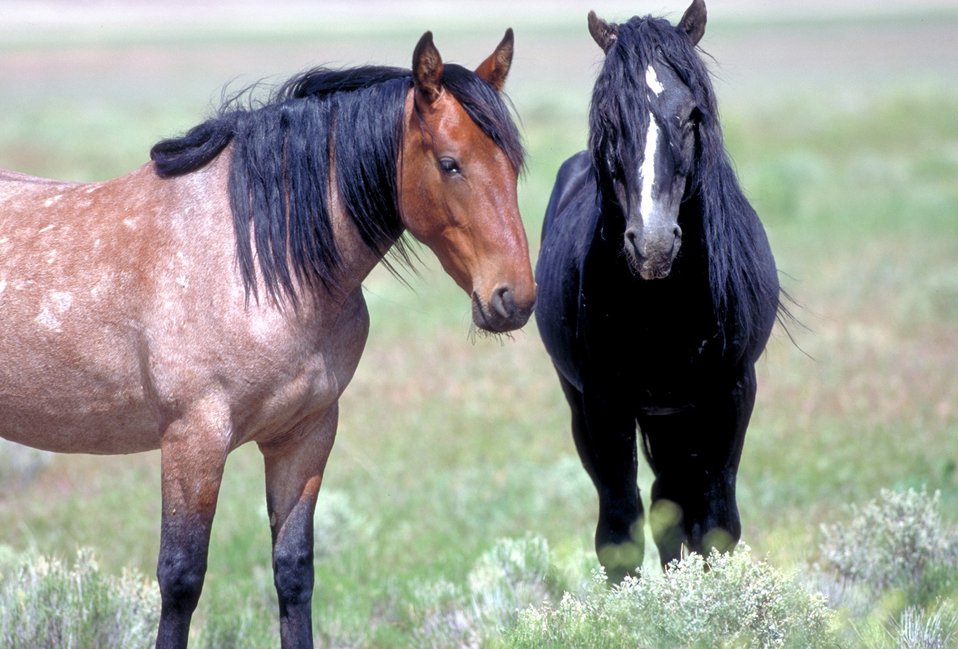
Onaqui Herd near Dugway, Utah.